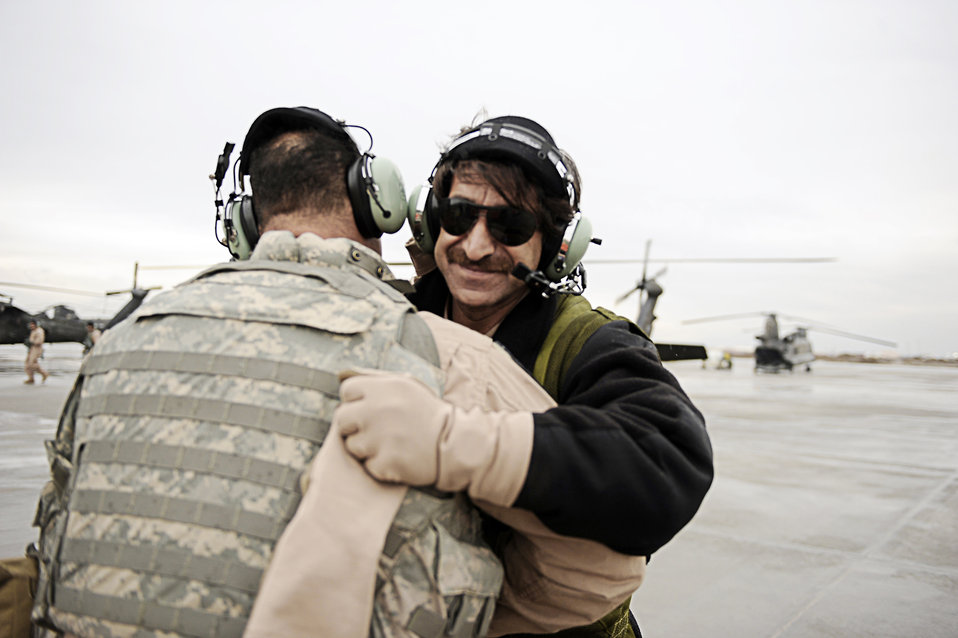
Joint team leads Afghan crew chief academy

Afghan National Army Air Corps Sgt. Abdul Wali hugs one of his mentors, Tech. Sgt. Garrett Cain, after a UH-60 Blackhawk proficiency flight, Feb. 28, 2010, at Bagram Airfield, Afghanistan. Sergeant Wali is a crew chief and Sergeant Cain is a rotary-wing crew chief mentor assigned to 440th Air Expeditionary Advisory Squadron